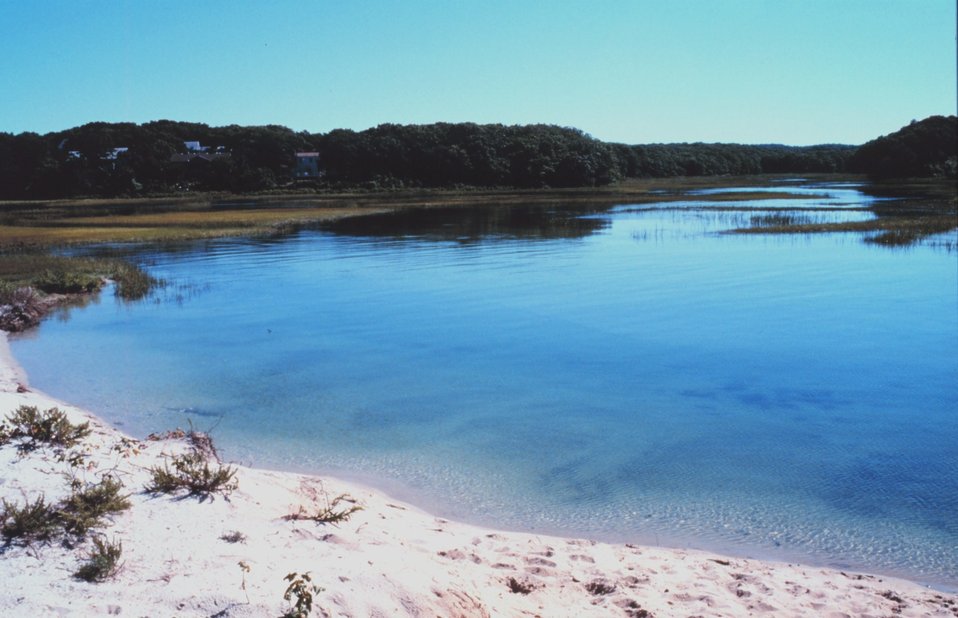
Great Sippewissett Marsh, West Falmouth